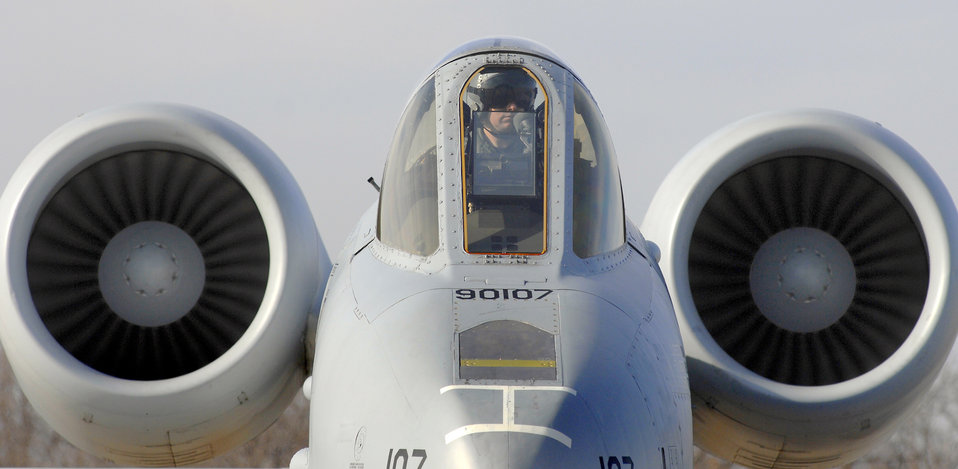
On the hot seat

A pilot with the 442nd Fighter Wing at Whiteman Air Force Base, Mo., sits on the ramp in his A-10 Thunderbolt II while crew chiefs perform a hot pit refuel for his aircraft Dec. 8, 2010. Hot pit refueling is a procedure usually performed in a combat situation to rapidly refuel aircraft while engines are running to speed pilots back into the fight.